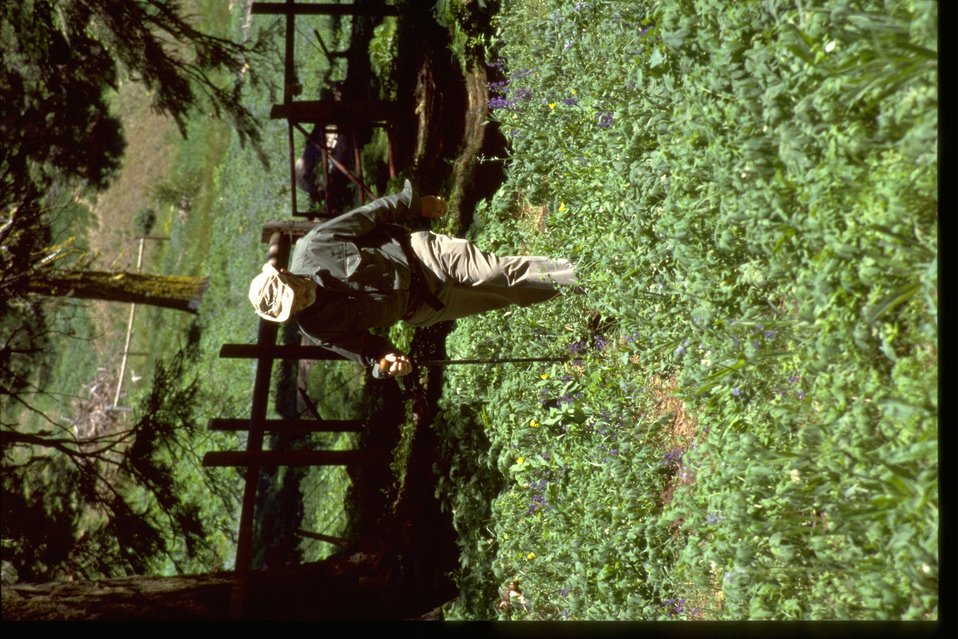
Hikers on the Pacific Crest Trail.